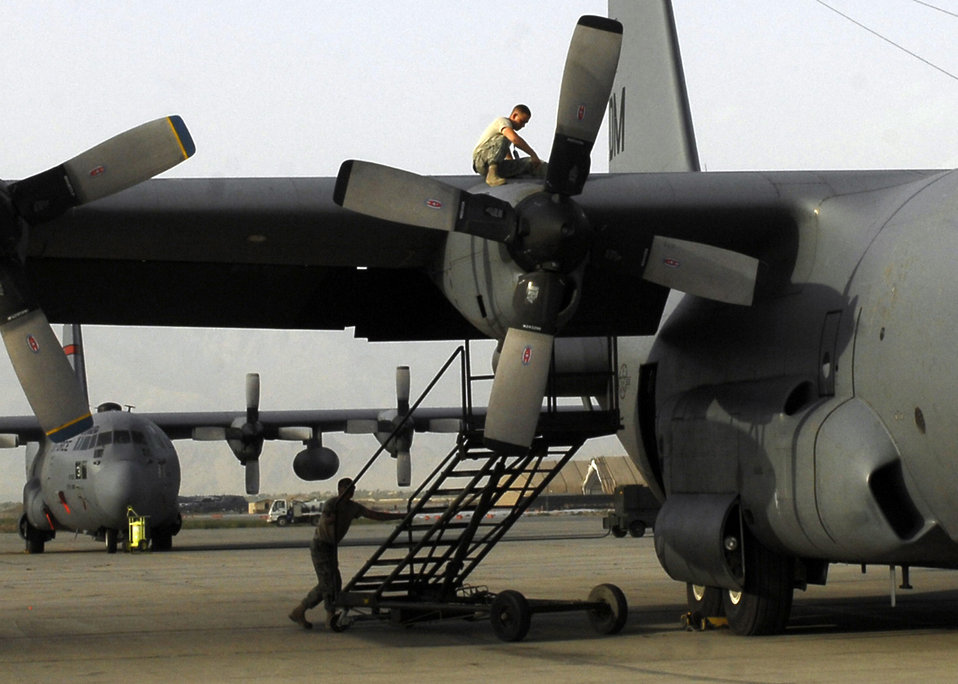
Airmen in EC-130H unit complete 2,000th combat mission

Staff Sgt. Andres Jaramillo secures the bolts on the wing of the EC-130H Compass Call while Tech. Sgt. Jose Rodriguez sets a ladder in place so he can begin to work on the propellers of the aircraft July 6 at Bagram Airfield, Afghanistan. Both Airmen are members of the 41st Expeditionary Aircraft Maintenance Unit and are deployed out of Davis-Monthan Air Force Base, Ariz.